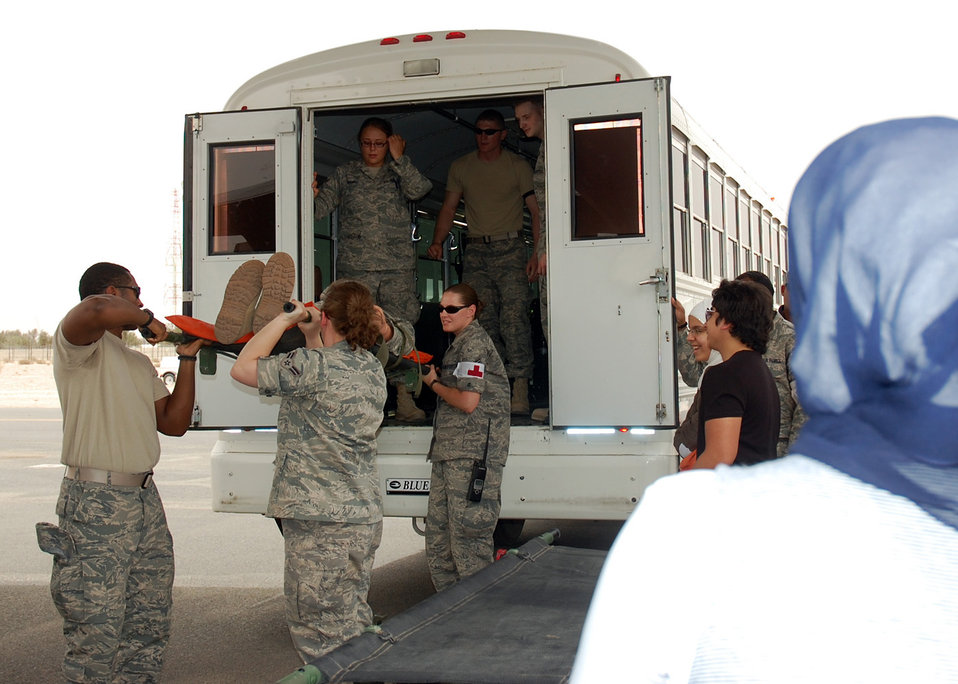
Local high school students get inside look at 386th

A student with the America-Mideast Educational and Training Services school watches Airmen from the 386th Expeditionary Medical Group demonstrate an aeromedical staging mission during their visit to the 386th Air Expeditionary Wing at an undisclosed air base in Southwest Asia May 16. The students were treated to a C-130 Hercules static display, a working dog demonstration and had lunch with Airmen during the visit to the air base.